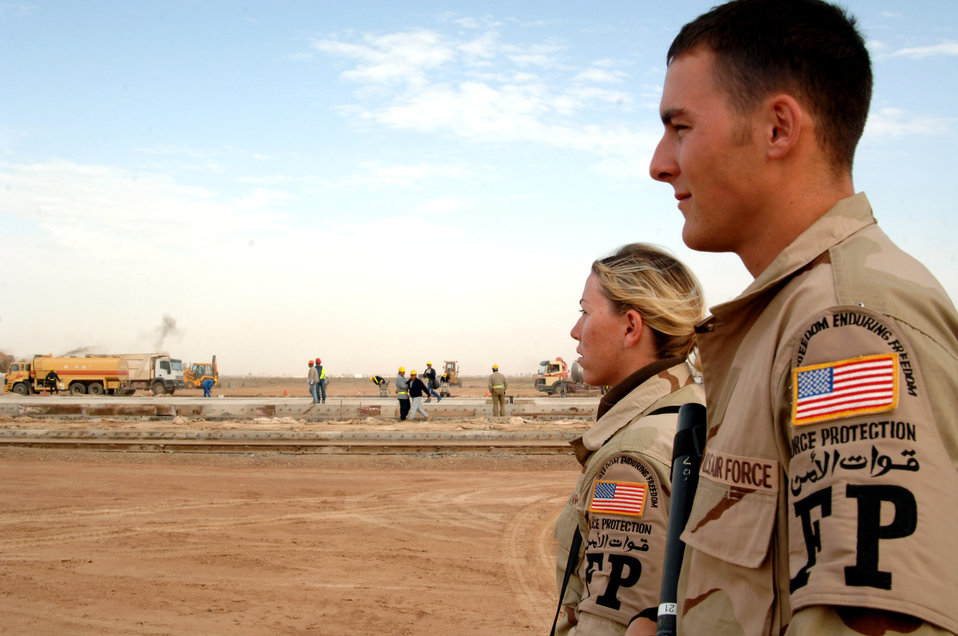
Airmen provide force protection 'inside the wire'

Airman 1st Class Jeremy Roberts and Senior Airman Julia Branch oversee foreign nationals working on the flightline at Balad Air Base in Iraq. As part of their force protection duties, the Airmen search vehicles and do personnel searches, providing escort for third country and local nationals working at Balad. Airman Roberts is deployed from the 91st Missile Maintenance Squadron at Minot Air Force Base, N.D., and Airman Branch is deployed from the 59th Medical Wing at Lackland AFB, Texas. Both Airmen are assigned to the 332nd Expeditionary Security Forces Squadron force protection.